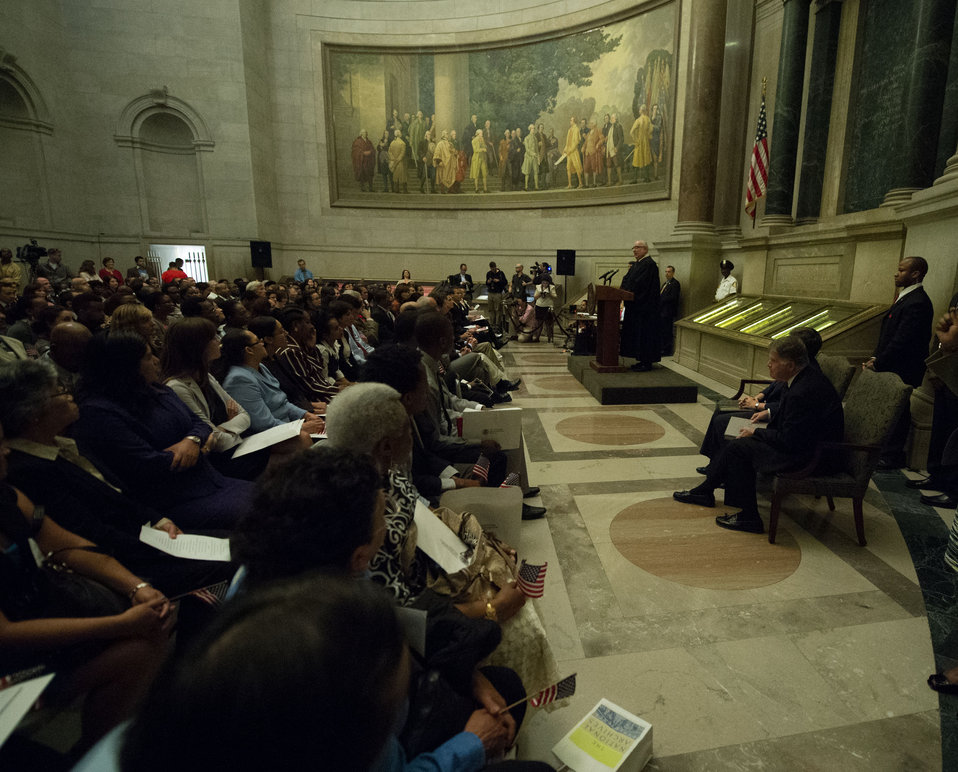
Constitution Day Naturalization Ceremony

The 225 petitioners for United States citizenship listen to Honorable Royce Lamberth, United States District Court for the District of Columbia. (Photo by Charles Fazio)
.